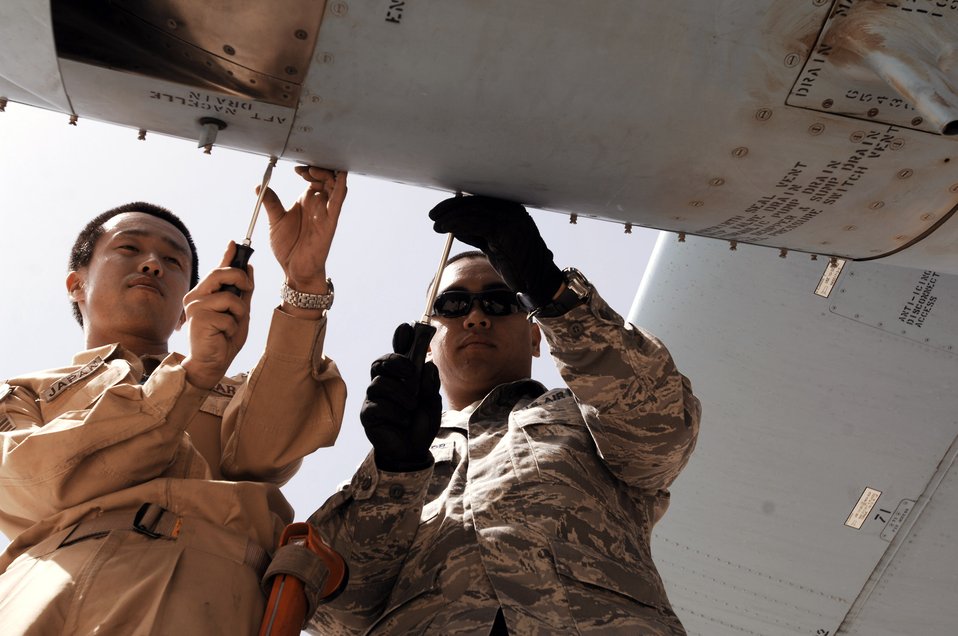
Coalition maintainers keep C-130 in the fight

Japanese Senior Airman Yuta Kawahara (left) and Staff Sgt. Ray Pontemayor open a panel on an engine of a Japan Air Self-Defense Force C-130 Hercules March 21 at a Southwest Asian air base. Airmen from the U.S., Japan Air Self-Defense Force and South Korean air force's 58th Airlift Wing participated in a coalition maintenance exchange program allowing maintainers to sharpen their skills, exchange ideas and promote closer relations among coalition air forces supporting the war on terrorism. Airman Kawahara is a maintainer from the Japan Air Self-Defense Force Iraq Reconstruction Support Airlift Wing, and Sergeant Pontemayor is a maintainer deployed to the 386th Expeditionary Aircraft Maintenance Squadron.